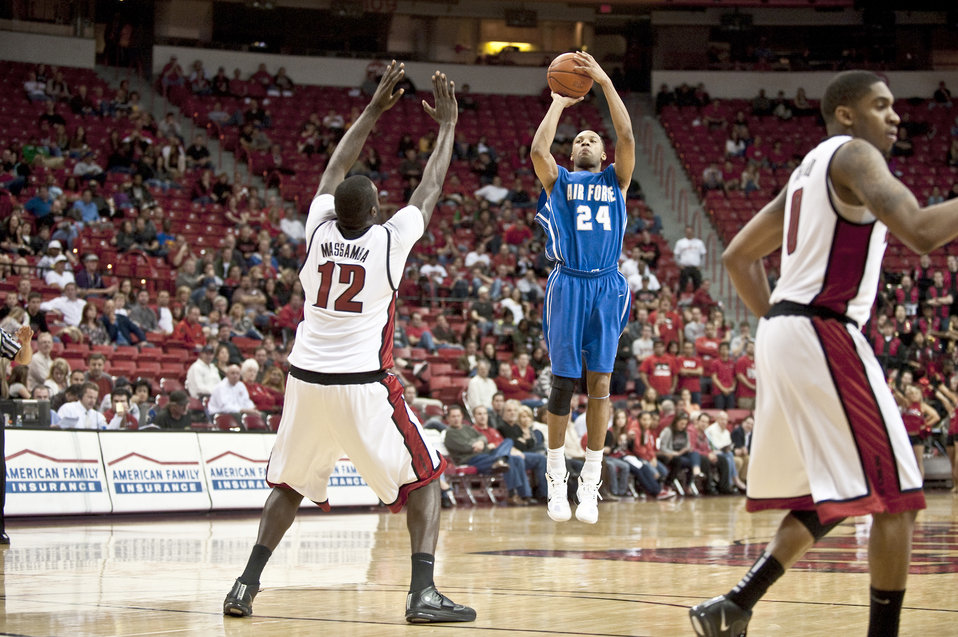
Falcons versus Rebels

Falcons senior forward Derek Brooks shoots a three-point shot over the outstretched arms of Runnin' Rebel Brice Massamba Feb. 15, 2011, at the Thomas and Mac Center in Las Vegas, Nev. The Air Force Falcons came up short against UNLV 49-42, making their record 13-11 overall and 4-7 in the Mountain West Conference.